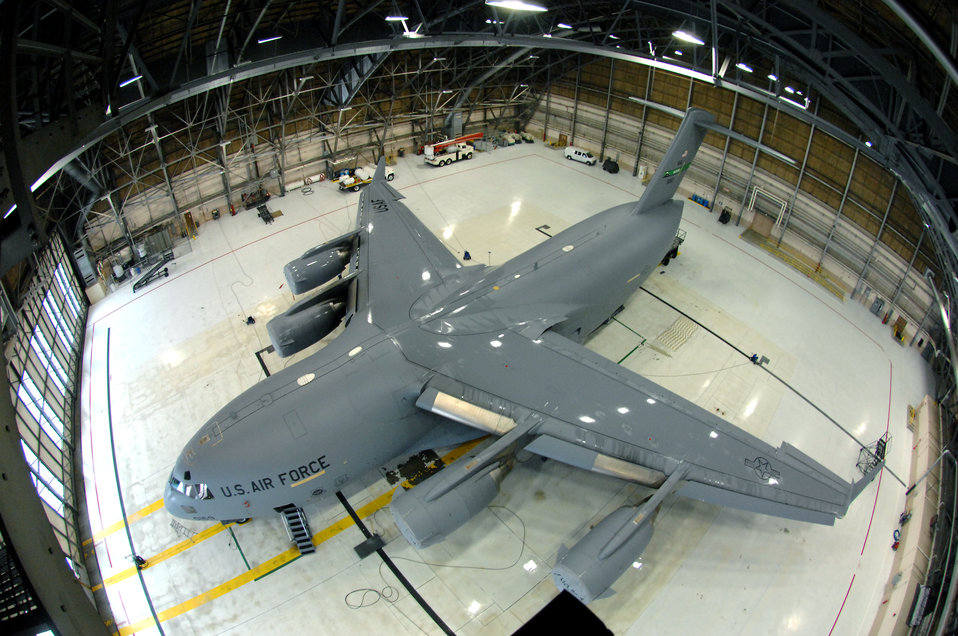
Glimmering Globemaster IIIs

A C-17 Globemaster III sits in Hangar 4 after being pressure washed during a routine home station inspection Jan. 29 at McChord Air Force Base, Wash. Regular washing and rinsing prevent and control aircraft corrosion.